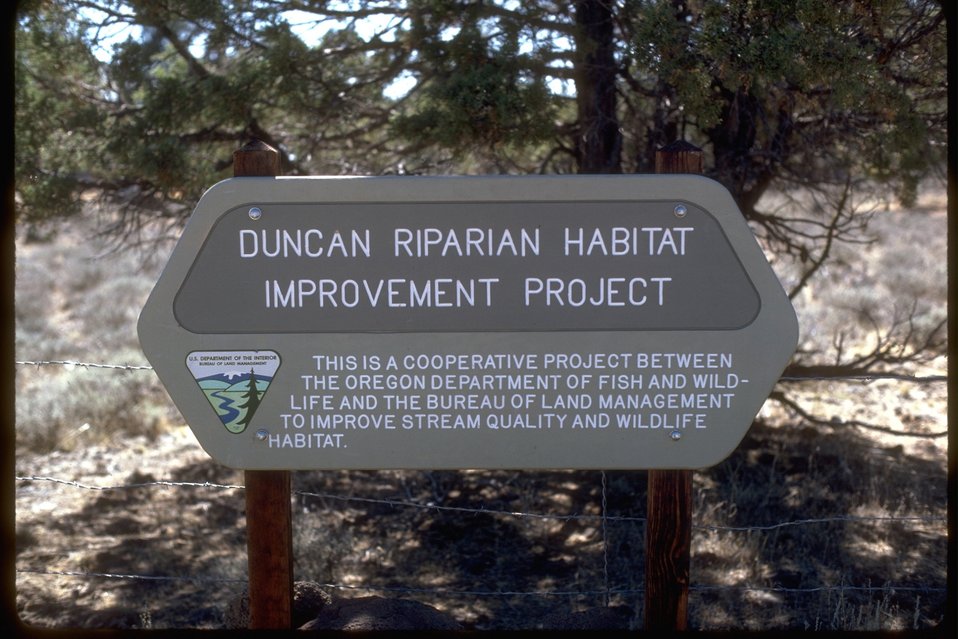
Duncan Springs Riparian Habitat Improvement project sign.